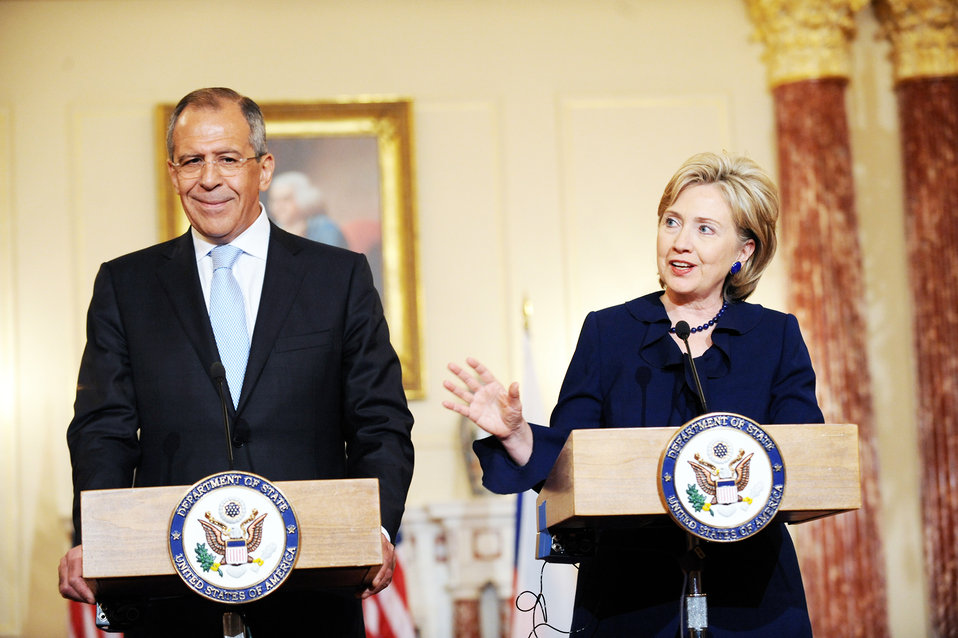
Secretary Clinton Meets With Russian Foreign Minister

U.S. Secretary of State Hillary Rodham Clinton hosts a bilateral meeting with Russian Foreign Minister Sergey Lavrov at the U.S. Department of State in Washington, DC May 7, 2009.